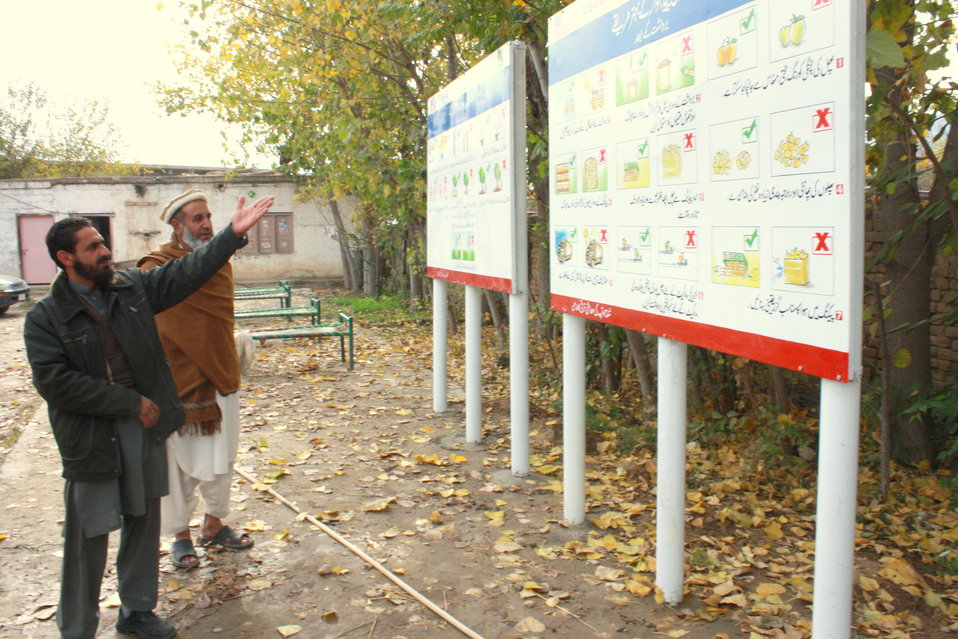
The USAID Firms Project Peach Hoardings on Best Agricultural Practices in the Peach Sector

The USAID Firms Project completed the installation of 40 peach hoardings at 20 key locations in Swat.